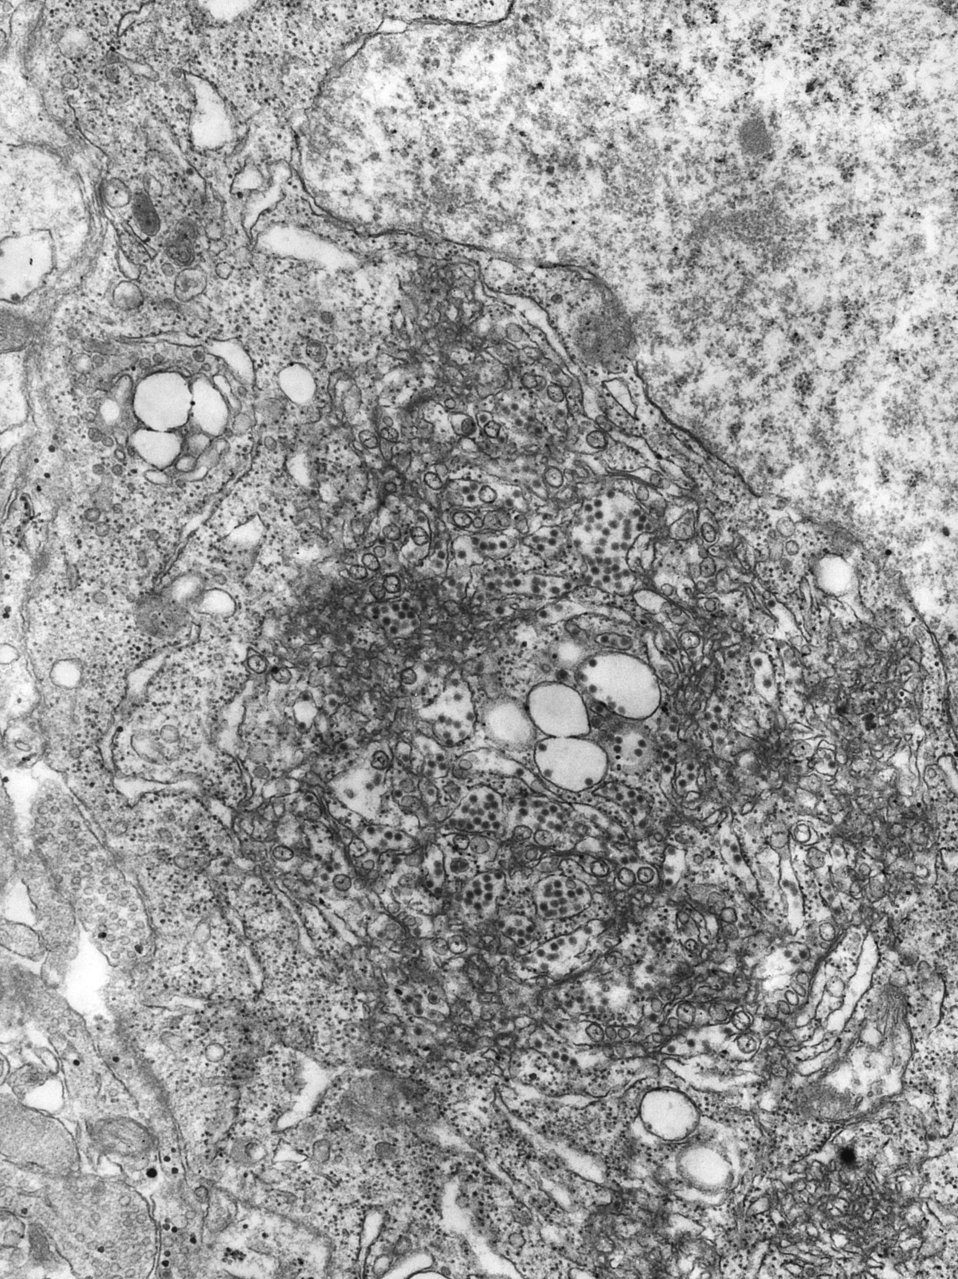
This 1975 transmission electron micrograph (TEM) revealed the presence of Russian spring-summer encephalitis (RSSE) virus virions in this tissue sample. As a tick-borne encephalitis, RSSE is an arbovirus, which means that it's transmitted through the bite of an infected Ixodes persulcatus tick.